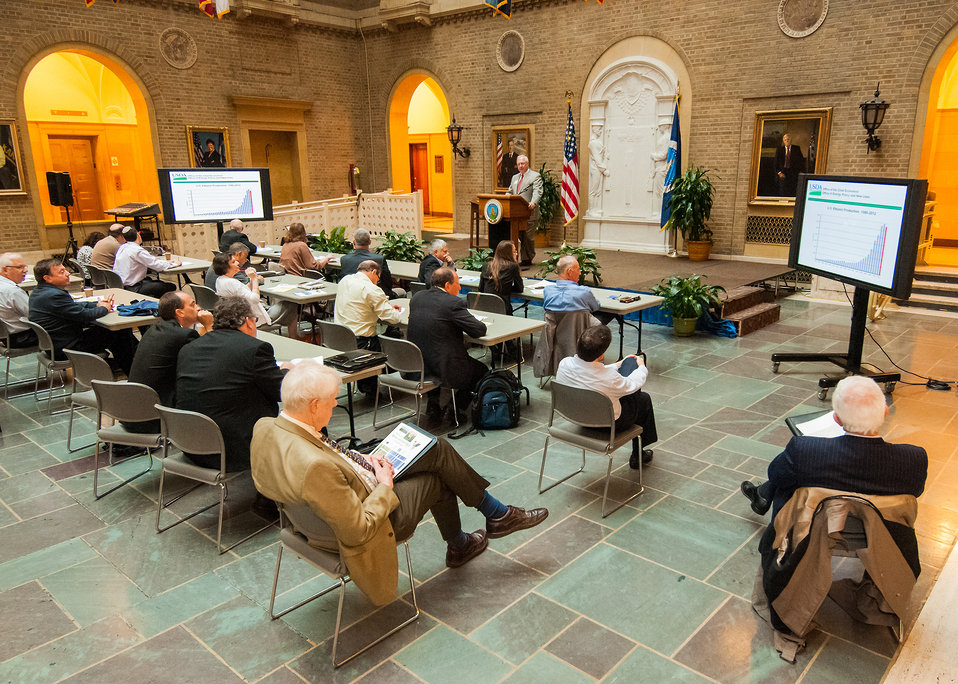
U.S. Department of Agriculture (USDA) Biomass Production Systems National Program Leader Dr. Harry Baumes discusses “from the Lab; to Farm, Field and Forest; to Fuels: An Overview of U.S. government bioenergy programs and how they interact at the U.S.-Israel Bio-Challenge Symposium at USDA in Washington, D.C. on Thursday, Apr. 18, 2013.